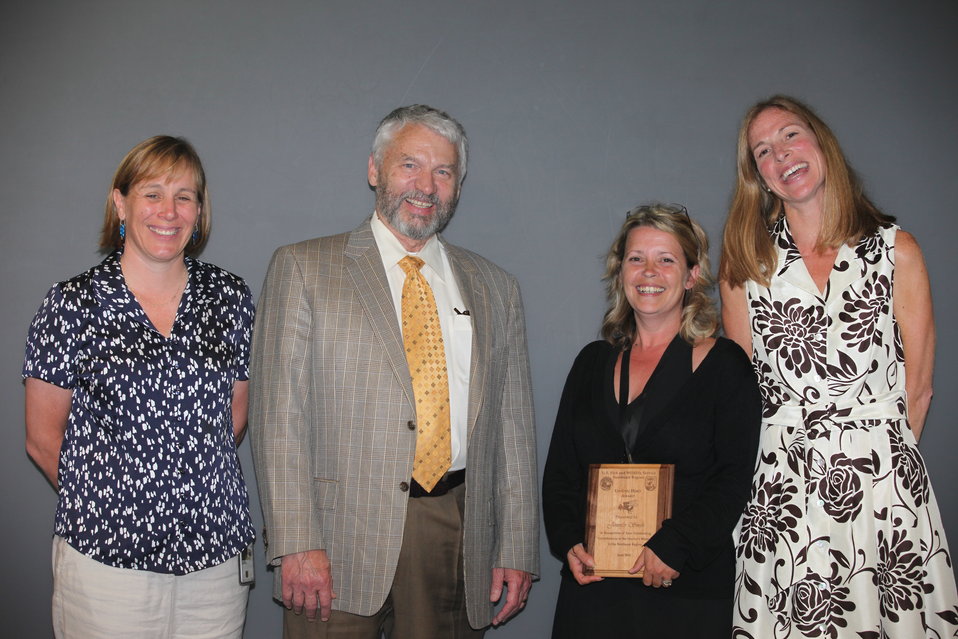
Jennifer Smith in Contracting and General Services was awarded a Region 5 Unsung Hero Award.
From left to right: Deputy Regional Director Deb Rocque, Deputy Director Rowan Gould, Jennifer Smith, and Regional Director Wendi Weber